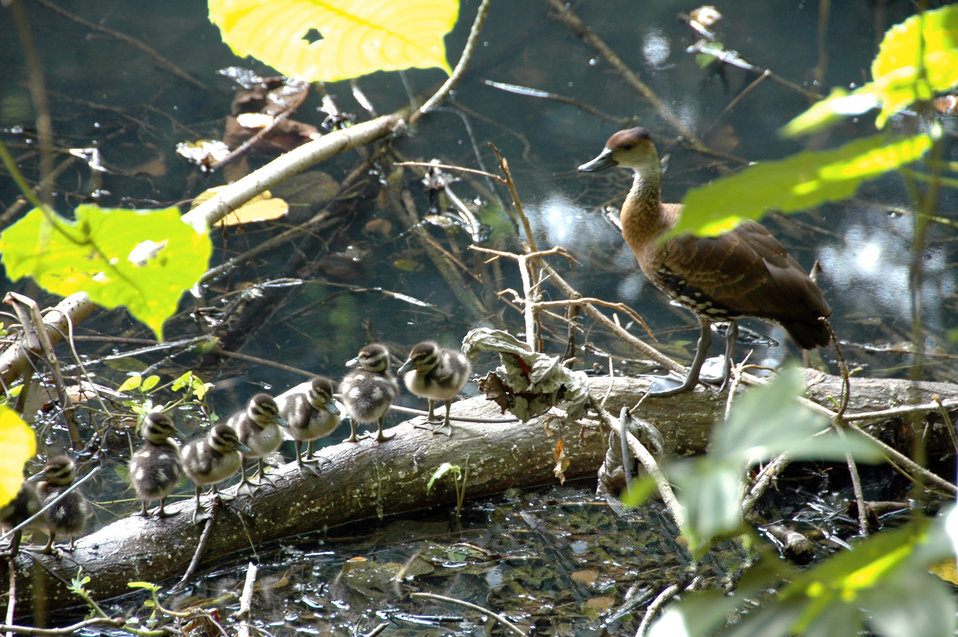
WIWD ducklings

West Indian whistling ducklings!